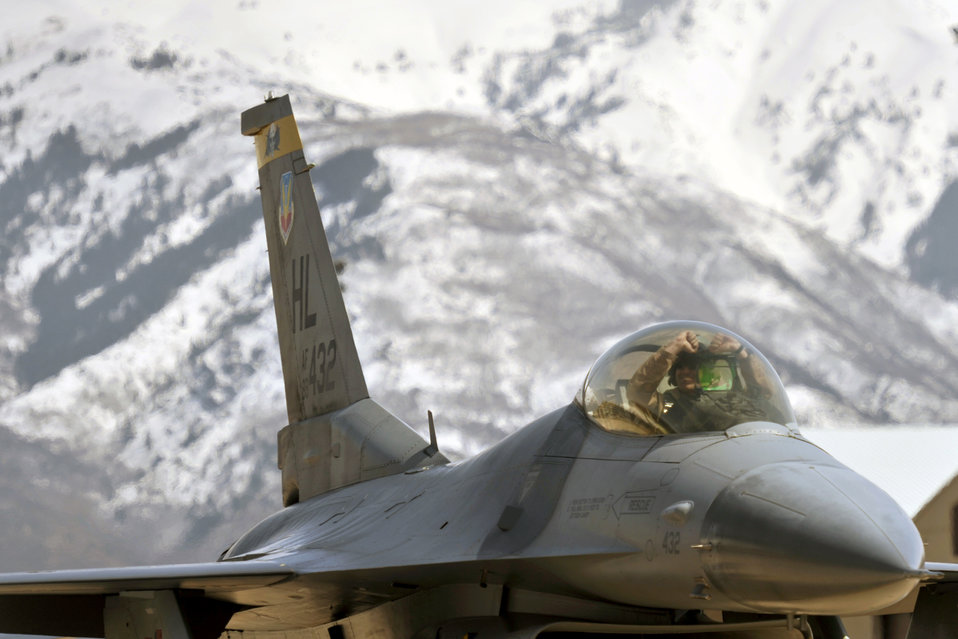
Airmen arrive

Col. William Bailey taxis his F-16 Fighting Falcon April 15, 2011, at Hill Air Force Base, Utah. Colonel Bailey is the commander of the 4th Fighter Squadron. He led six jets as the first of their team to return from a six-month deployment to Bagram Air Base, Afghanistan.